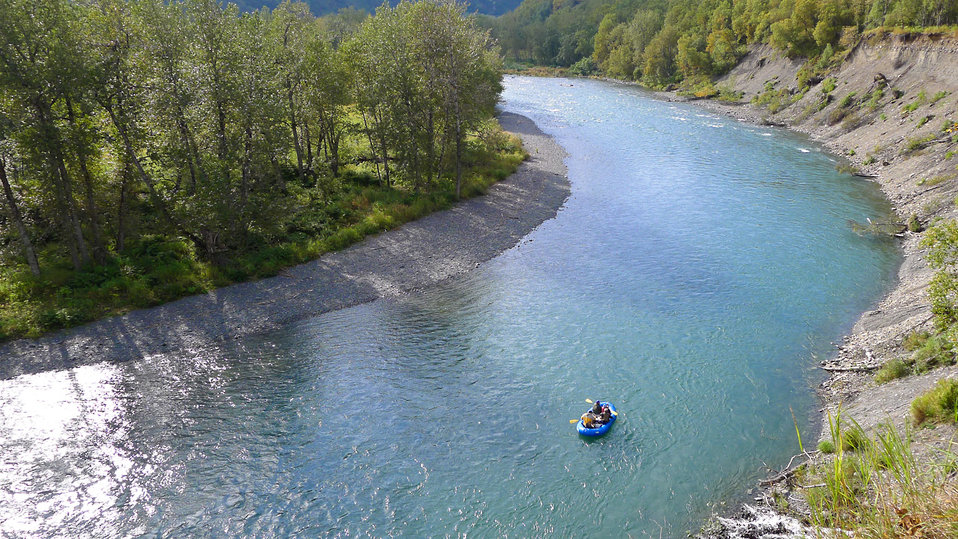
Floating the Uganik River

Lisa Hupp/USFWS
Source: Kodiak NWR
Most visitors float the Uganik River in inflatable rafts that can easily be transported by float plane.